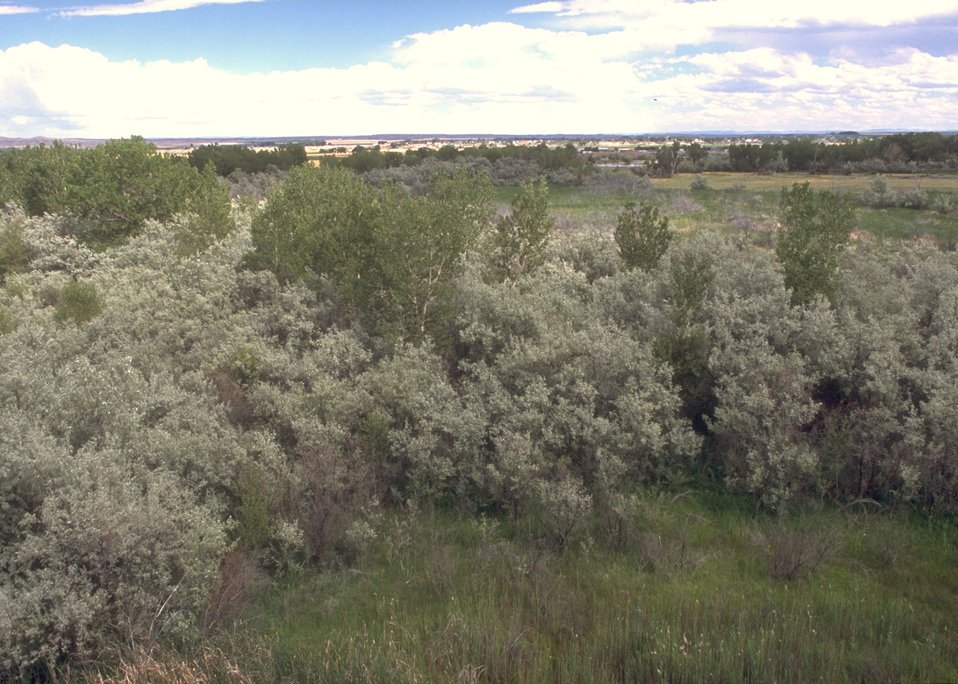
Duck Swamp Interpretive Area, Worland Field Office.